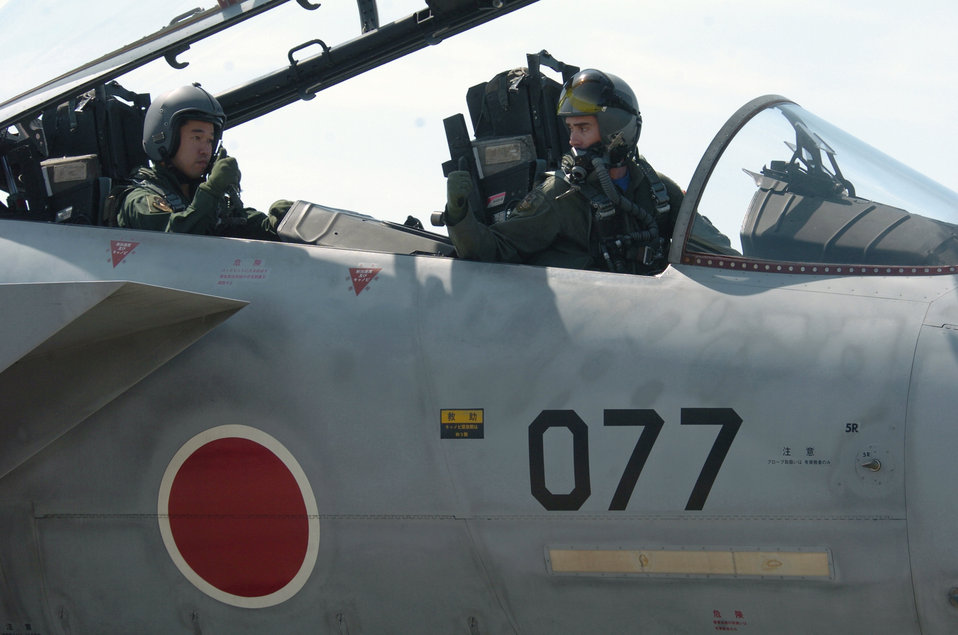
Air Force aviator strengthens U.S.-Japan friendship, ties

NYUTABARU AIR BASE, Japan -- Capt. Justin Fletcher (right) gives the thumbs up signal to Japanese Capt. Kenechi Ohshima before taking off for a mission. Captain Fletcher provides F-15 Eagle pilot techniques and counterair tactics to Japanese airmen here. He is a pilot and exchange officer assigned to the 23rd Fighter Tactical Squadron.